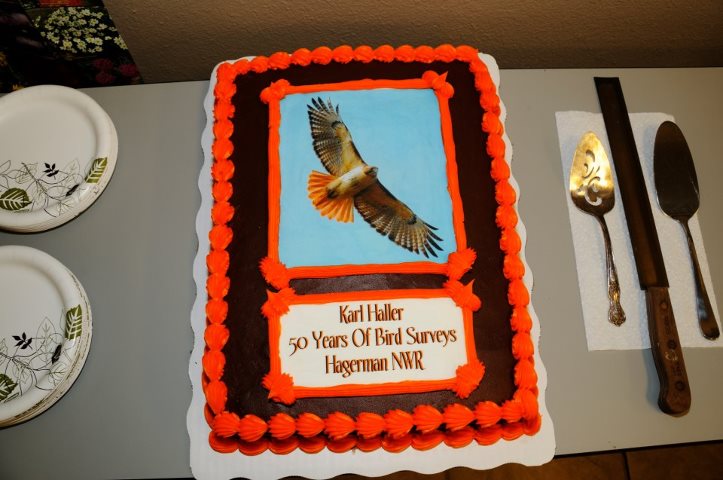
Karl Haller cake

Beneath the picture of a red-tailed hawk, the inscription reads: 'Karl Haller: 50 Years of Bird Surveys, Hagerman Refuge'